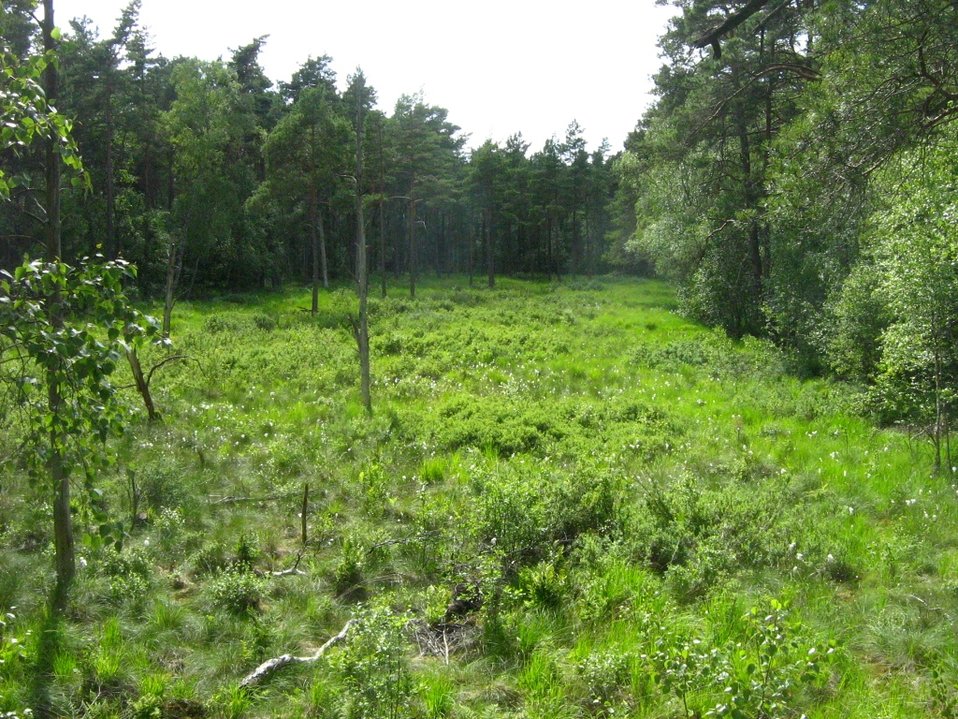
Deutsch: Das Dänschenburger Moor ist eines der größten Hochmoore Norddeutschlands. Durch Wasserabsenkung ist das Moor inzwischen fast vollständig mit Kiefern und Birken bewaldet.
(NSG „Großes Moor bei Dänschenburg“ N21, 71 ha, Gemeindegebiet der Stadt Marlow, Landkreis Nordvorpommern, Mecklenburg) Camera location 54° 07′ 46.12″ N, 12° 26′ 27.49″ E View this and other nearby images on: OpenStreetMap - Google Maps - Google Earth 54.129478; 12.440969